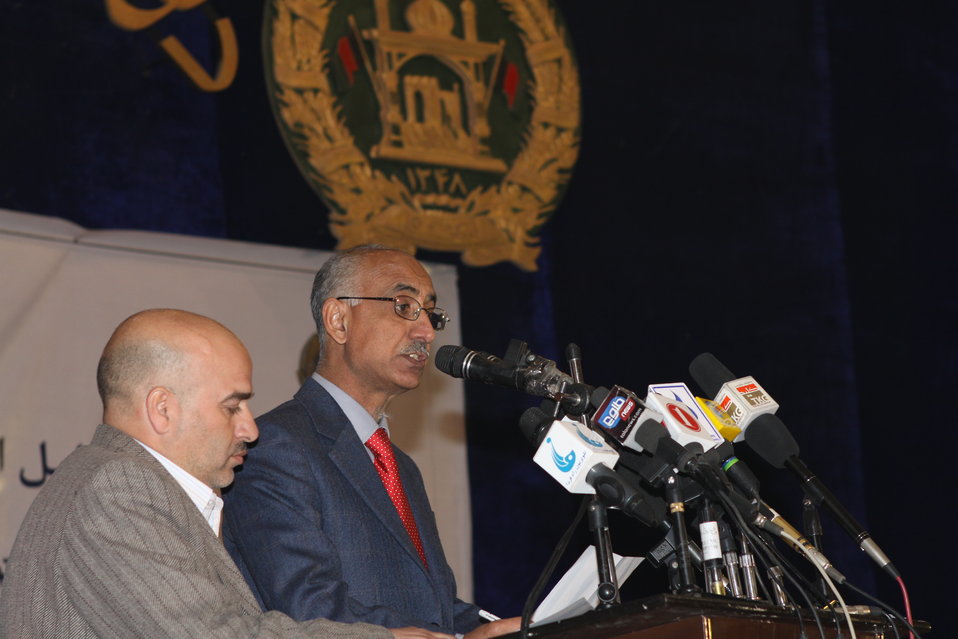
Community Health Workers Celebrated

Kabul, Afghanistan | December 5, 2010 — In support of the United Nations designated International Volunteer Day for Economic and Social Development, Afghanistan’s Ministry of Public Health celebrated its annual Community Health Worker Day today. Acting Minister of Public Health Dr. Suraya Dalil, USAID Senior Deputy Mission Director Robert Hellyer, other government officials, and international donors joined in recognizing the critical contribution of community health workers in Afghanistan and encouraging them to continue their voluntary support to their communities.
The event praised the contributions of the more than 22,000 volunteers throughout the country who deliver community level health-education, counseling, and services out of village health posts located in private homes. The Ministry of Public Health envisioned that community-based healthcare programs will actively encourage communities and families to adopt healthy lifestyles and behaviors, and provide families access to high quality and socially acceptable preventative medicine and life-saving services.
“We have 22,000 community health workers in Afghanistan that are able to implement the basic and standard medicines. They all have been trained through a job description,” said Minister Dalil. Addressing the health workers, she added, “I am proud and feel powerful that I have people like you.”
USAID-funded health projects collaborate closely with the Ministry of Public Health to improve the health and nutritional status of Afghans, provide quality primary healthcare, and promote healthy behaviors at the community and household-levels. USAID supported the training of more than 9,000 of the volunteer community health workers currently working in Afghanistan.
“On behalf of the American people, I congratulate the Community Health Workers for their diligence to gain the skills and knowledge necessary to serve their communities in this important role,” said USAID Senior Deputy Mission Director Hellyer. “USAID strongly supports community based health care and believes that quality community-based health services are essential to reaching Afghanistan’s Millennium Development Goals.”
To support the Basic Package of Health Services, USAID assisted in developing the community health worker training manual, helped train community health worker supervisors and master-trainers, facilitated in-service training, and produced and developed reporting tools, job aids, and education materials.